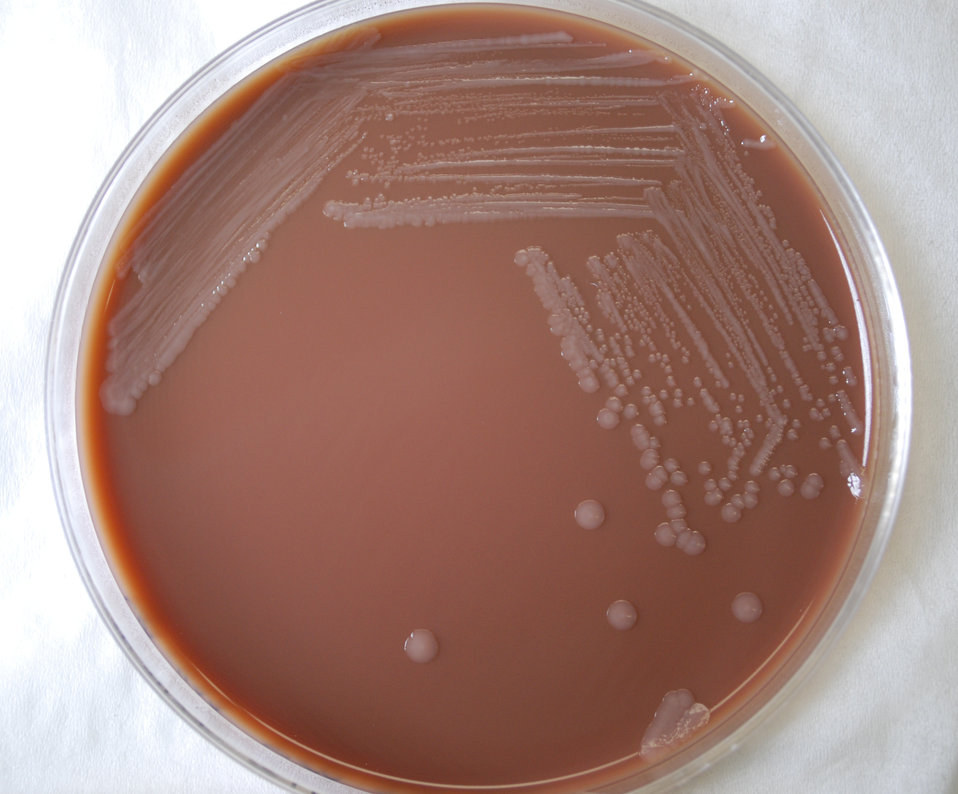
This photograph depicts the colonial morphology displayed by Gram-negative Yersinia pestis bacteria, which was grown on a medium of chocolate agar, for a 72 hour time period, at a temperature of 37�C. For closer views of these bacterial colonies, see PHIL 12263 and 12264.